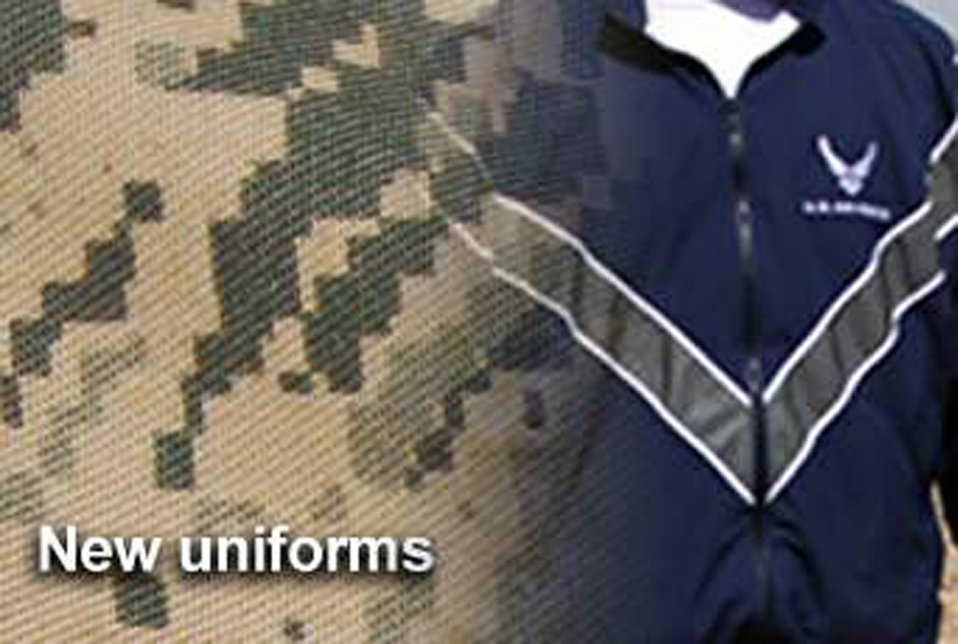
New uniforms: Comfortable, functional are goals

Changes are in the works for the airman battle uniform and the physical training uniform.